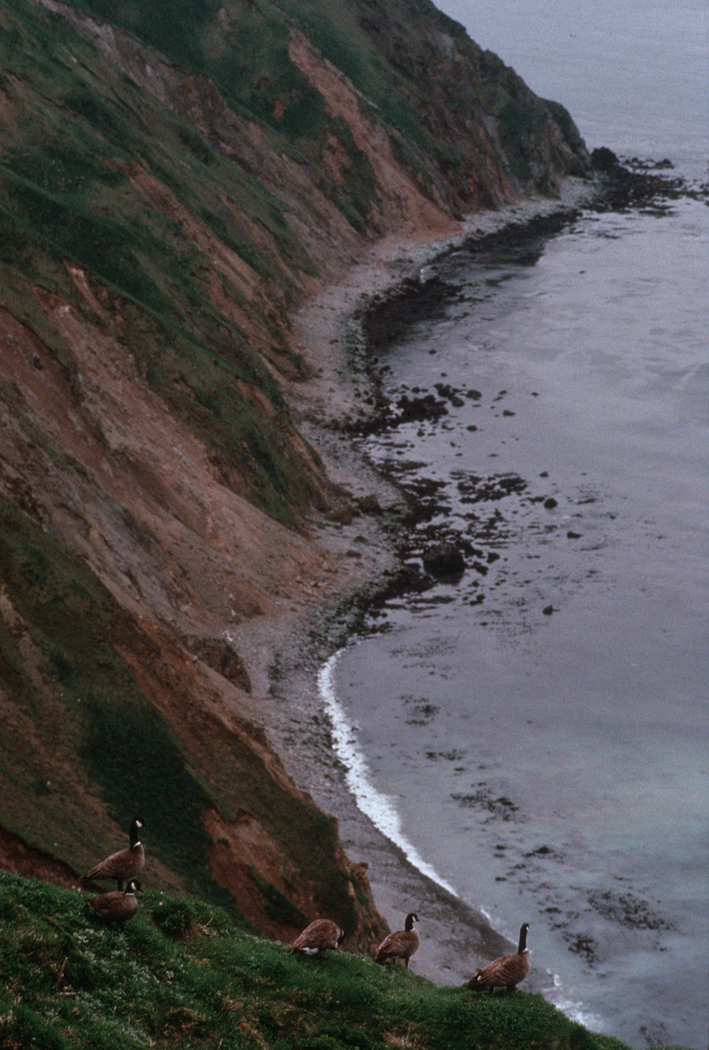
Aleutian Cackling Geese on Sea Bluff

Aleutian Cackling Goose, formerly called Aleutian Canada Goose